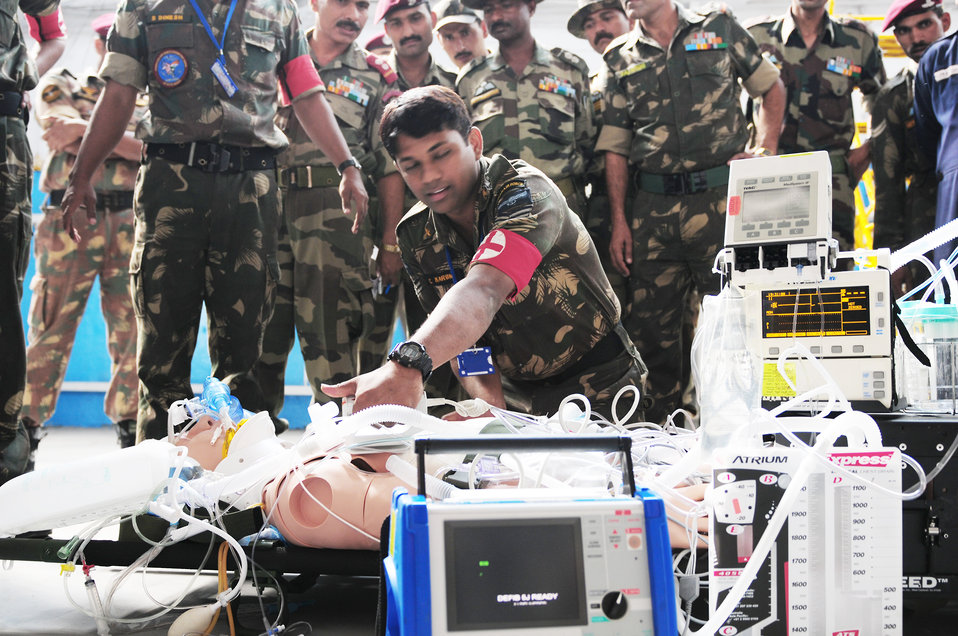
Cope India dubbed a success

An Indian air force medic provides emergency response on a mannequin patient during a U.S. Air Force medical demonstration as part of exercise Cope India Oct. 21, 2009. Cope India is humanitarian assistance disaster relief exercise scheduled Oct. 19 to 23.